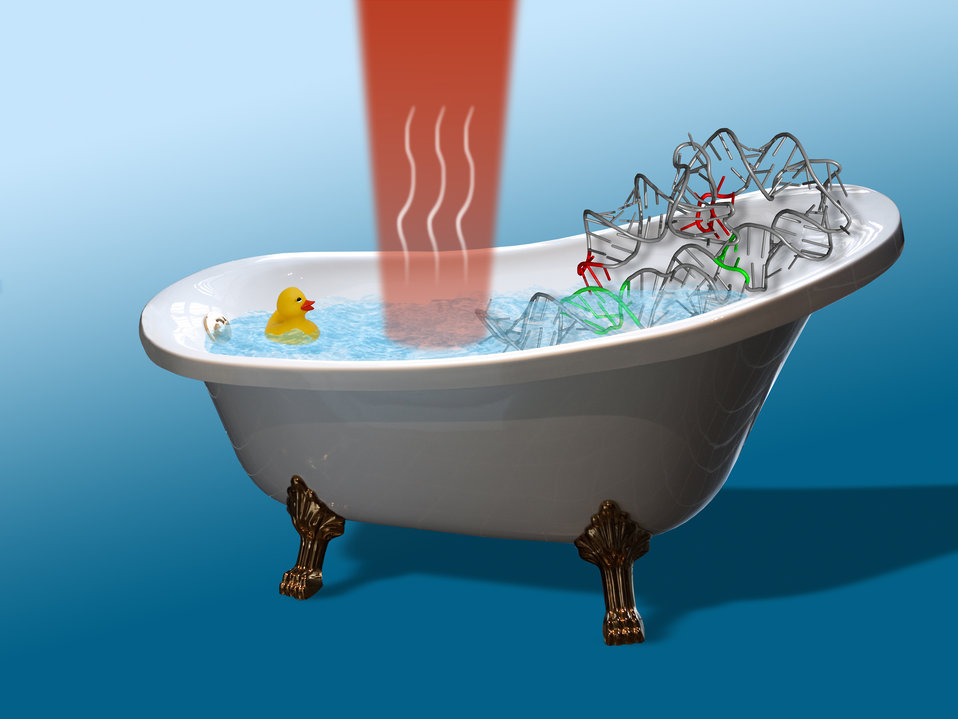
Some Like It Hot. How to Heat a Nano Bathtub the JILA Way

Infrared laser light heats the water in 'nano bathtub' for JILA research on individual RNA molecules.